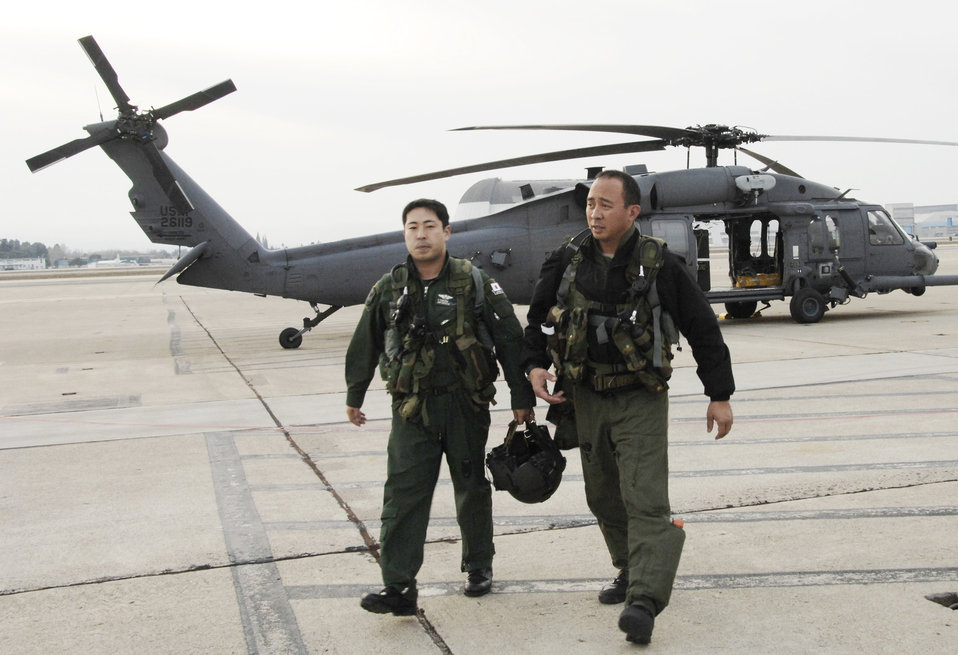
Rescue crews train Japan Air Self Defense Force pilots

Maj. George Dona (right) and Capt. Takeshi Tokuda head back to an operations building after a day of air refueling training Dec. 9, 2009, at Moffett Federal Airfield, Calif. Major Dona is an HH-60G Pave Hawk helicopter pilot with the 129th Rescue Squadron at Moffett Field. Captain Tokuda is a Japan Air Self-Defense Force UH-60J pilot with the Air Rescue Wing at Komaki Air Base, Japan.